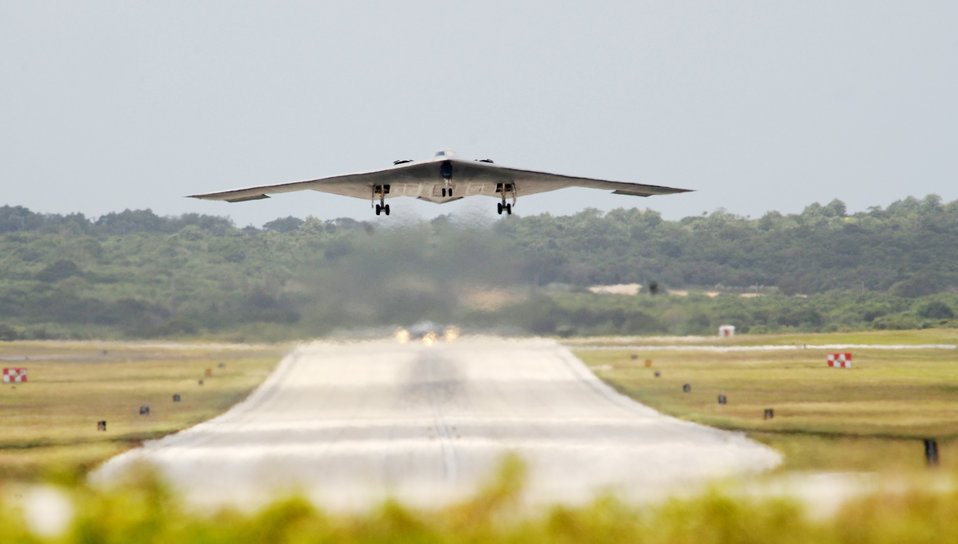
B-2s arrive at Andersen

A B-2 Spirit from Whiteman Air Force Base, Mo., gets airborne while another B-2 waits for clearance March 4, 2010, at Andersen Air Force Base, Guam. More than 270 Airmen and four B-2 Spirits are deployed to Andersen AFB supporting the Pacific regions continuous bomber presence.